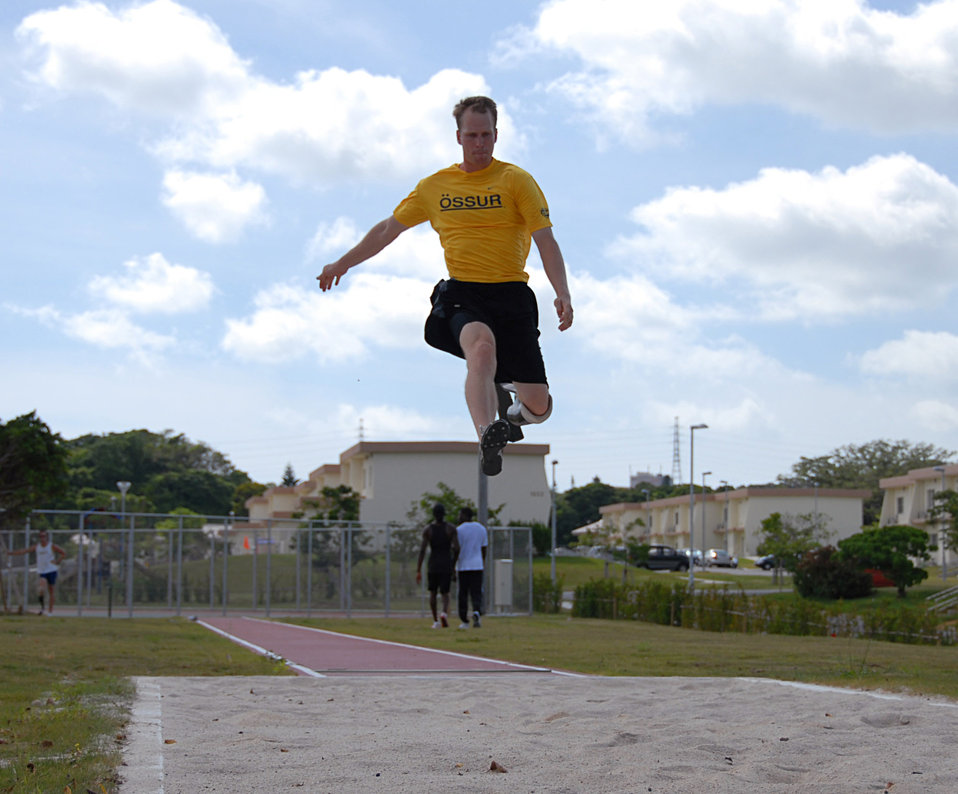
Paralympic athletes train at Kadena

Paralympian Jeff Skiba of Chula Vista, Calif., practices the long jump during pentathlon training Aug. 26 at Ryukyu Middle School on Kadena Air Base, Japan. More than 100 athletes and support staff from the U.S. Paralympics track and field and swim teams arrived on Kadena AB Aug. 24 to live and train for the next ten days in preparation for the 2008 Paralympic Games being held in Beijing, China, Sept. 6.